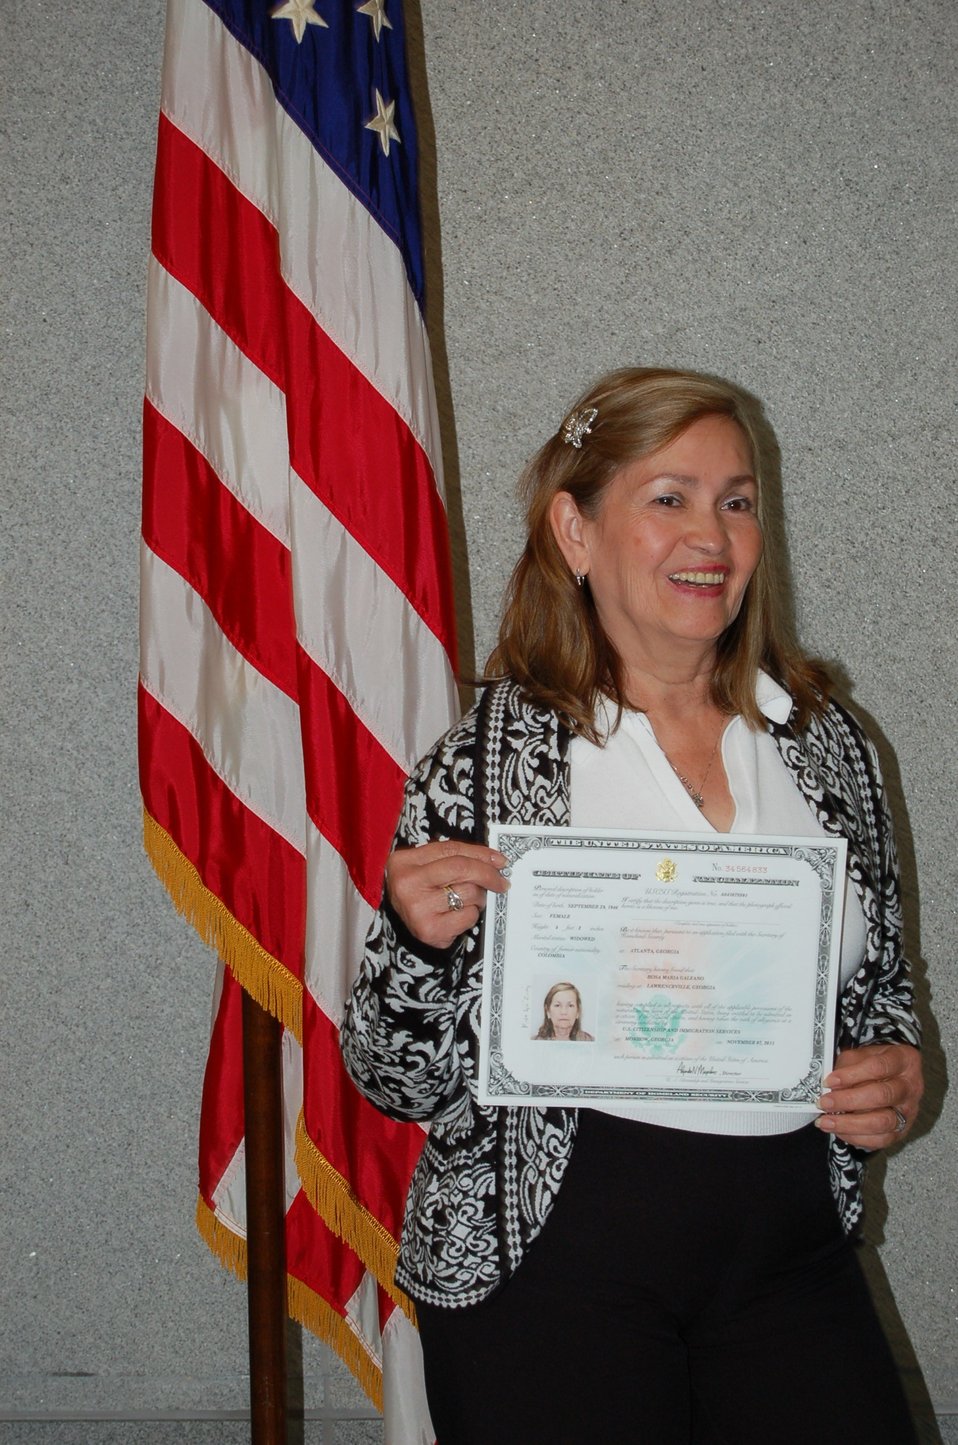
New Citizens